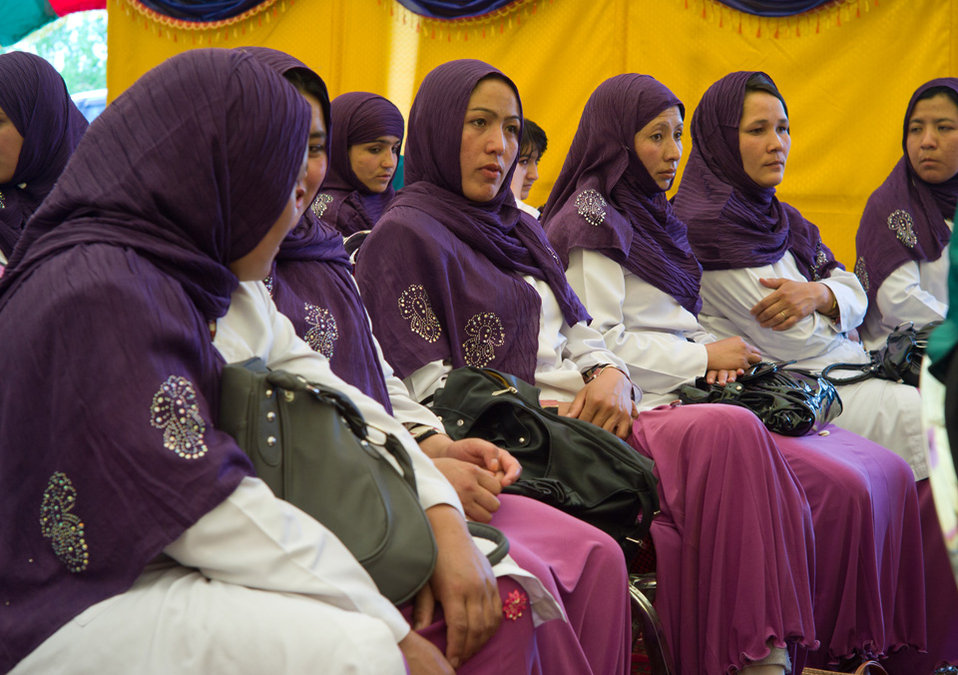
Graduates